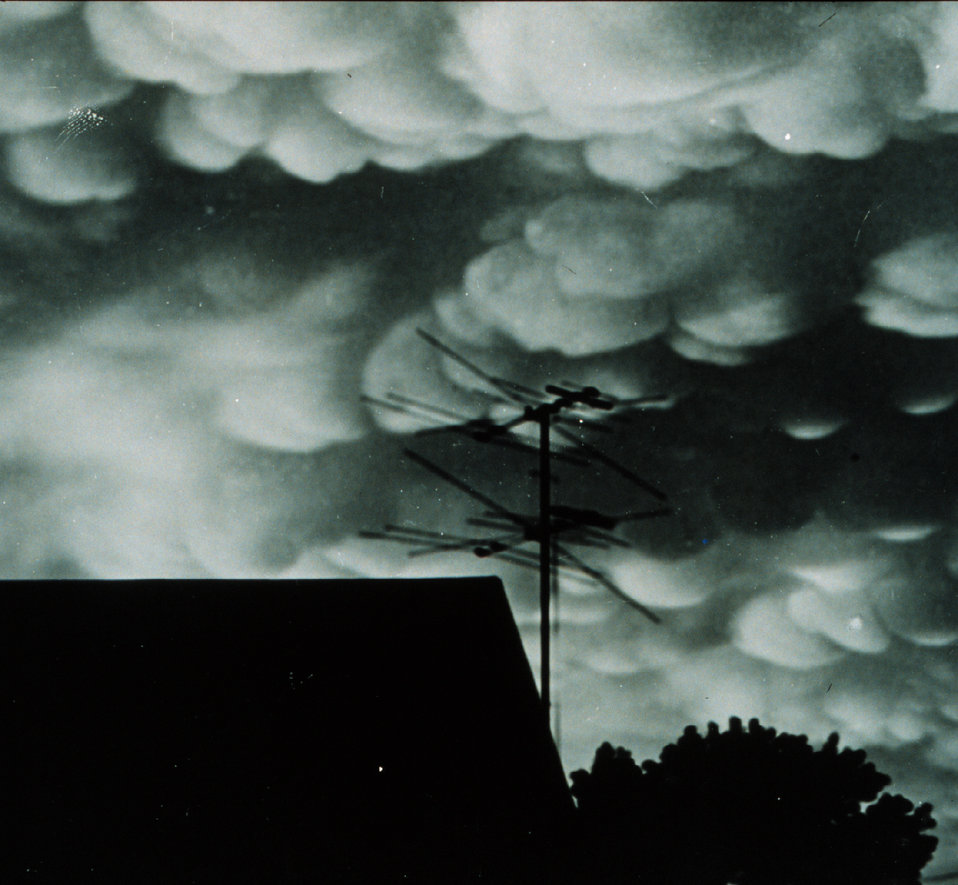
Mammatocumulus - often associated with tornado development